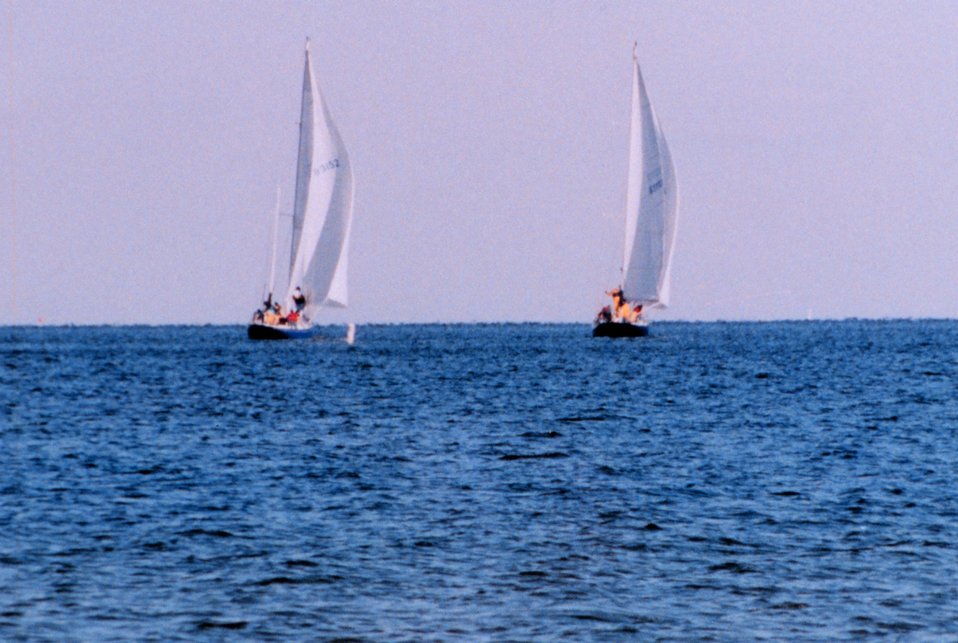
Wintertime sailing on the Patuxent River.